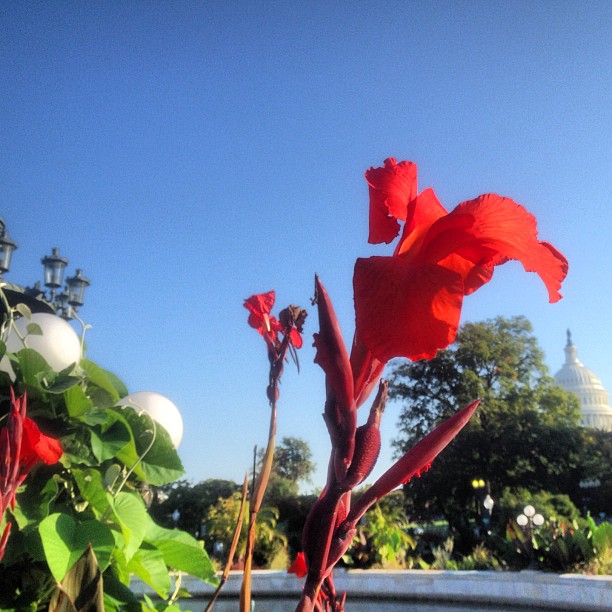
Perfect day on Capitol Hill, be sure to enjoy Bartholdi Park before the cold weather sets in!